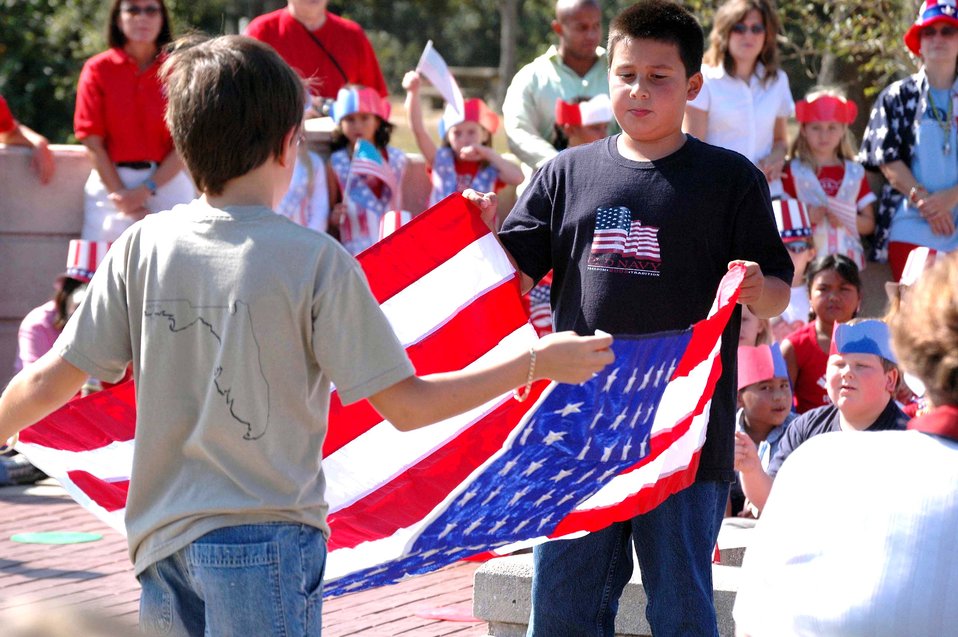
Children honor veterans

EGLIN AIR FORCE BASE, Fla. (AFPN) -- Fifth-graders Seth Rodriguez and Tyler Schrack fold the American flag during Oak Hill Elementary Schools Veterans Day walk. Oak Hill students have been doing the walk for 30 years.